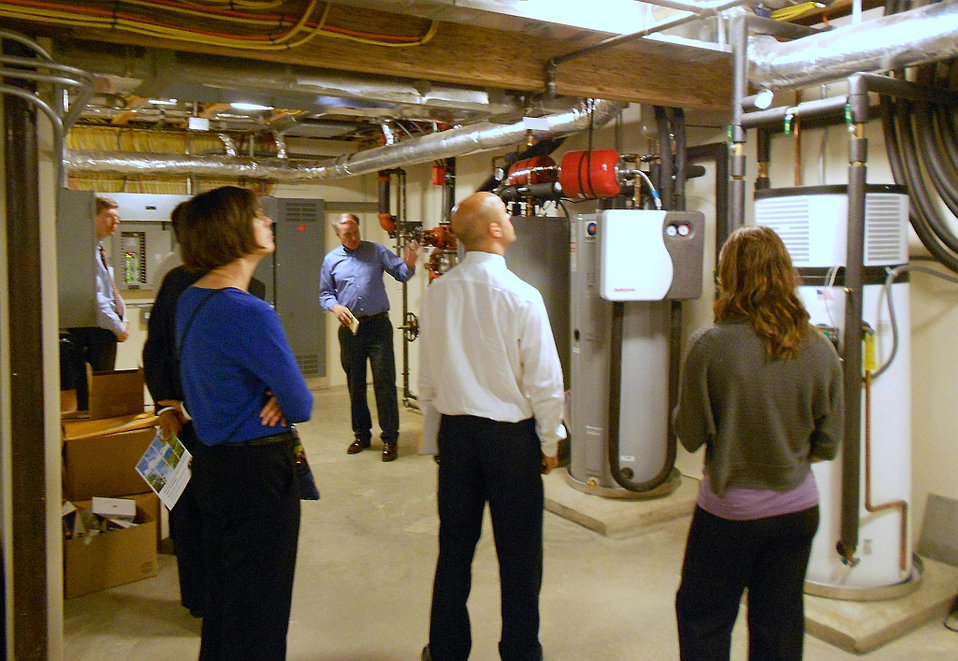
Net Zero Energy Residential Testing Facility Tour

Dr. Hunter Fanney (left center) Chief of the Building Environment Lab in NIST’s Engineer Lab points out features of the NIST Net Zero Energy Residential Test Facility ‘s Earth Coupled Heat Pump Systems to Senate : Dr. Hunter Fanney (left center) Chief of the Building Environment Lab in NIST’s Engineer Lab staffers in the building’s basement.